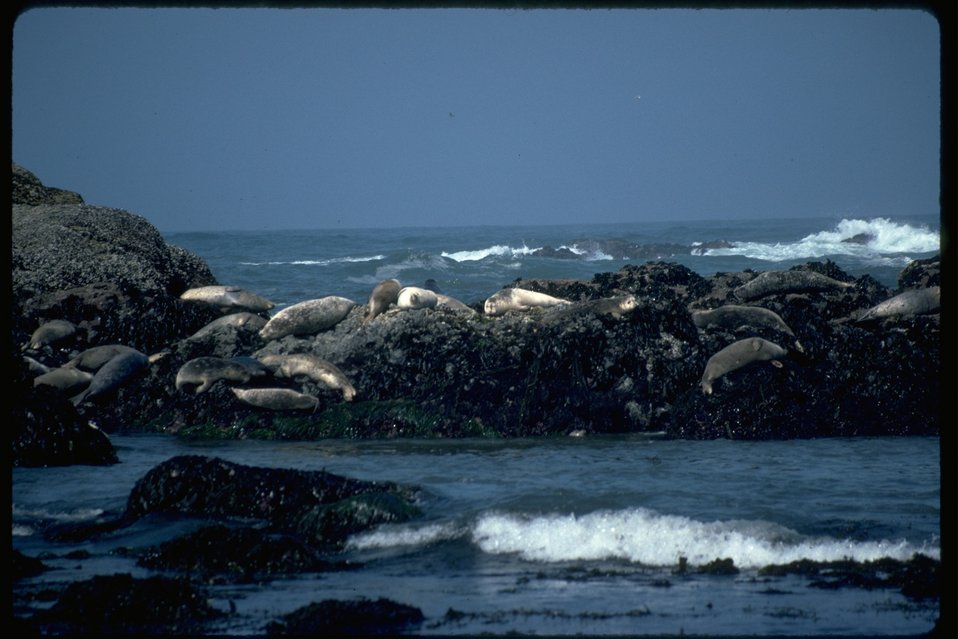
Seals in Yaquina Bay.